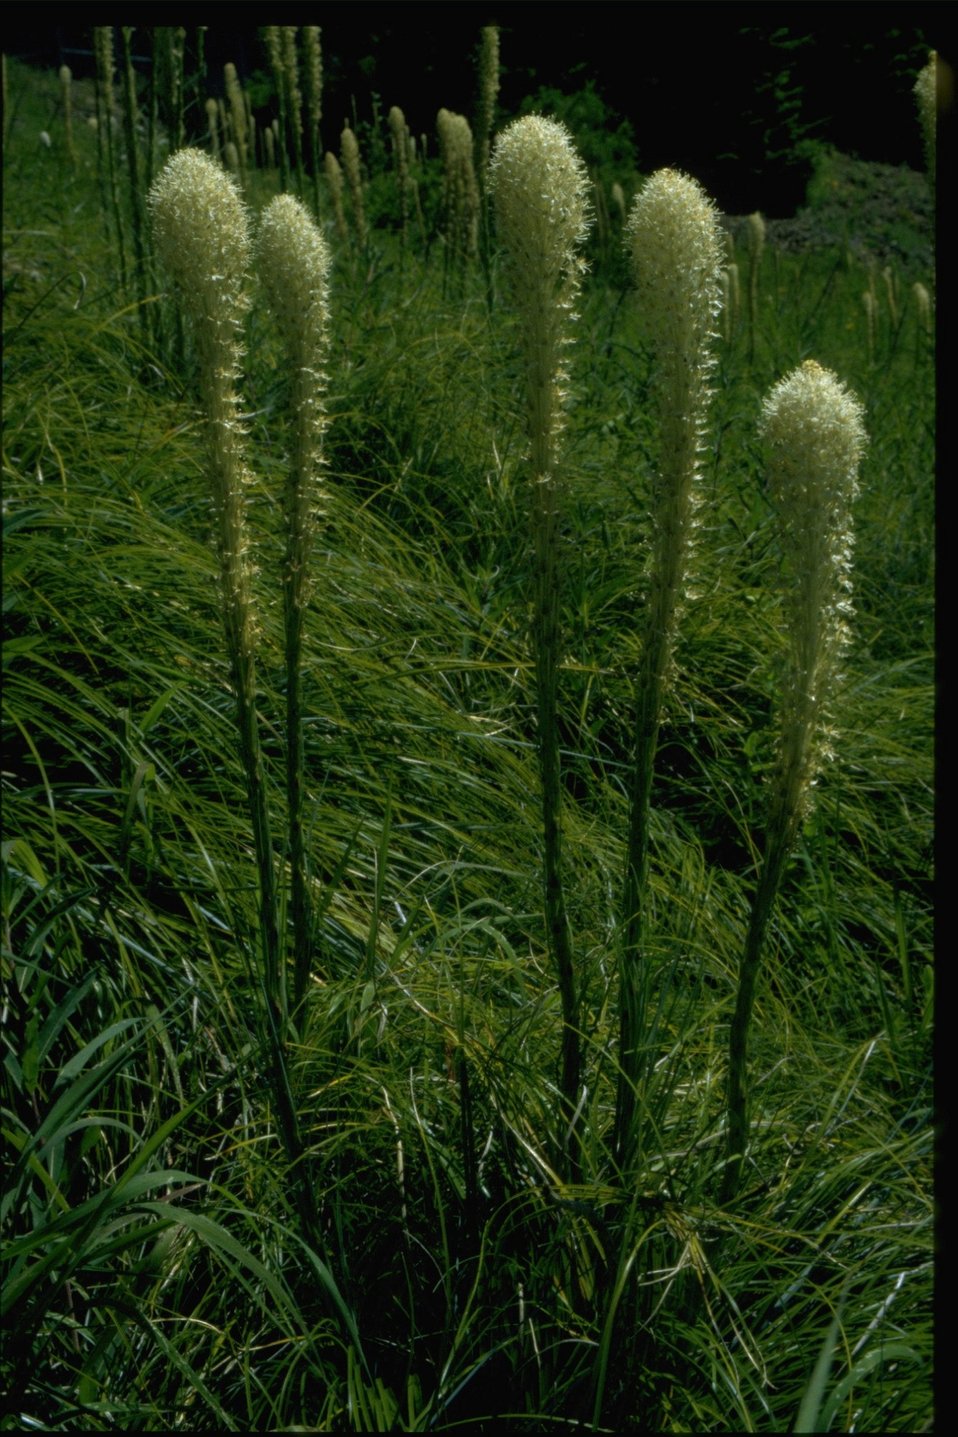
Medium shot of Xenophyllum tenax.